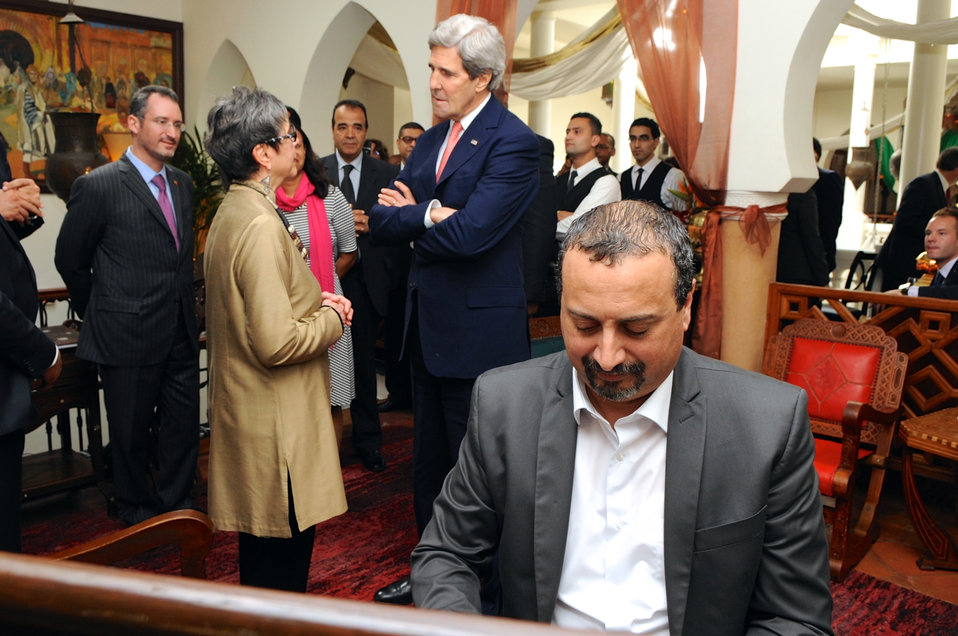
Secretary Kerry Chats With Rick's Cafe Owner While Piano Player Named Sam Plays in Casablanca

U.S. Secretary of State John Kerry chats with proprietor Kathy Kriger - a former State Department Foreign Service Officer - while a piano player named Sam plays during a visit to Rick's American Cafe in Casablanca, Morocco, on April 4, 2014.